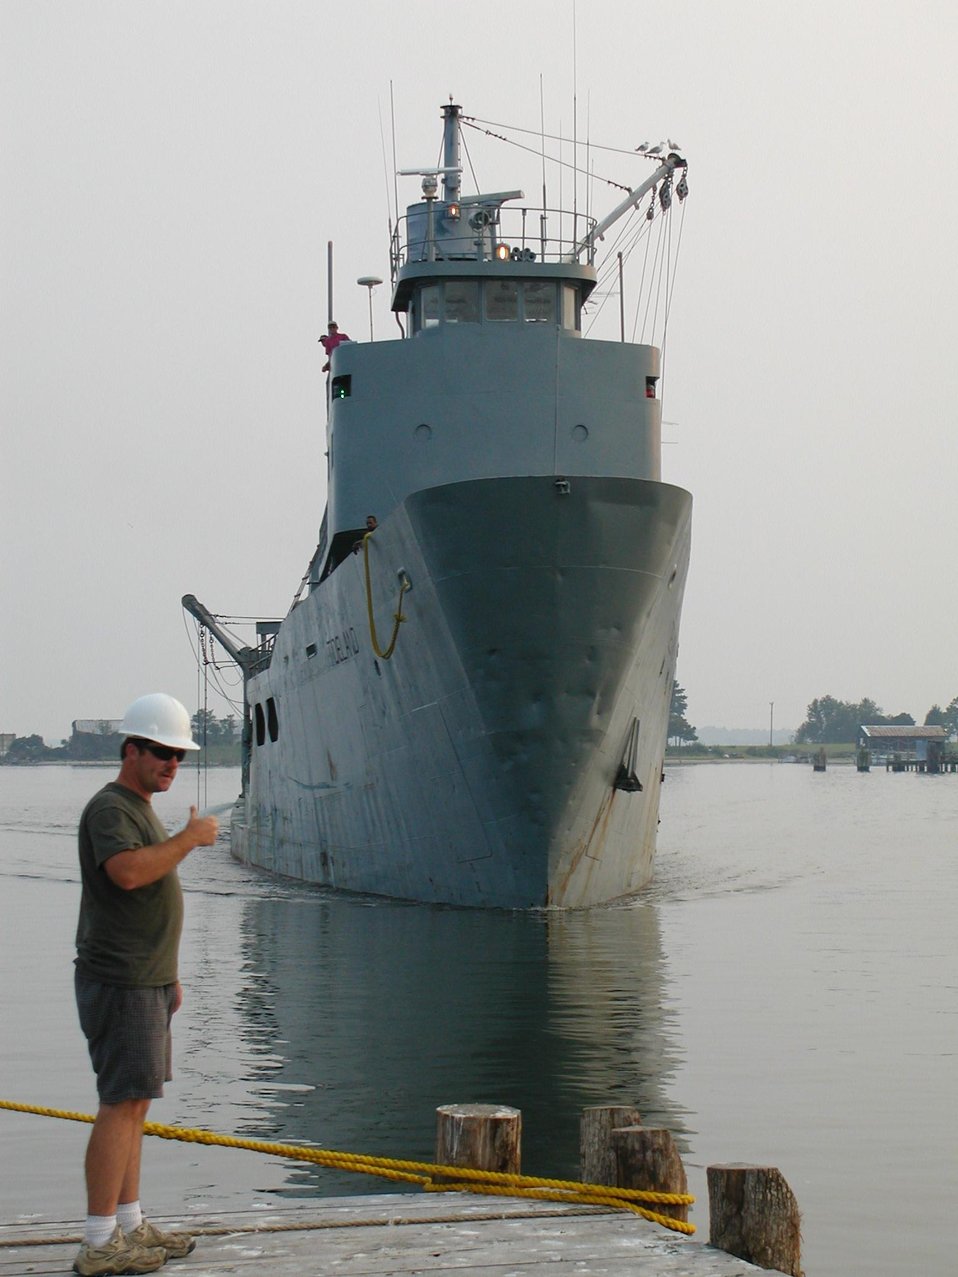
NMFS port agent waiting to inspect menhaden boat as it arrives in port.